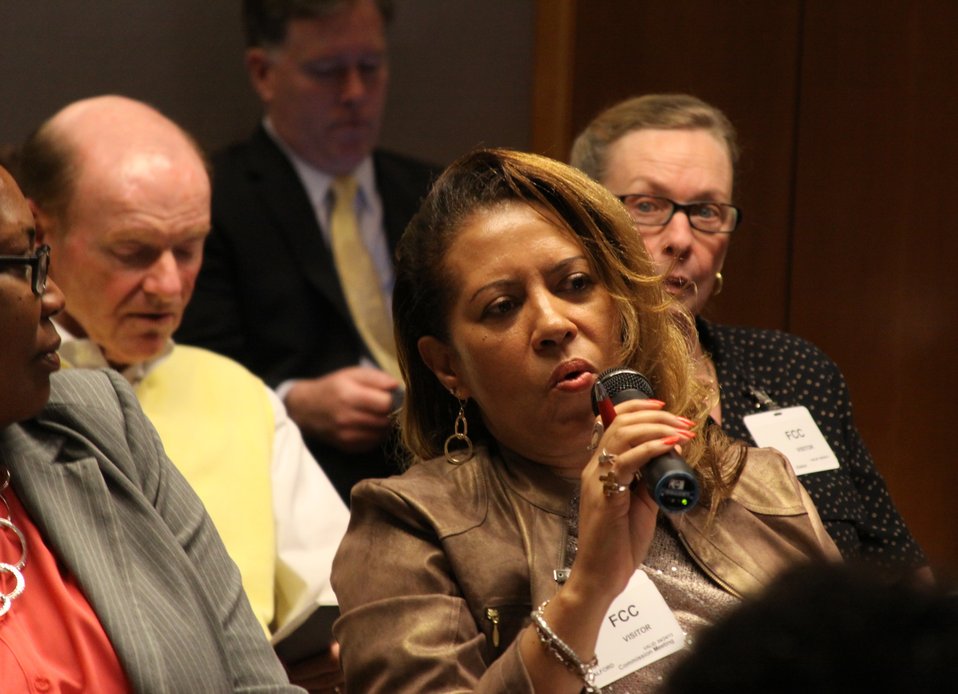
Digital Literacy for Seniors: How the Internet Can Benefit Older Americans, April 24, 2013